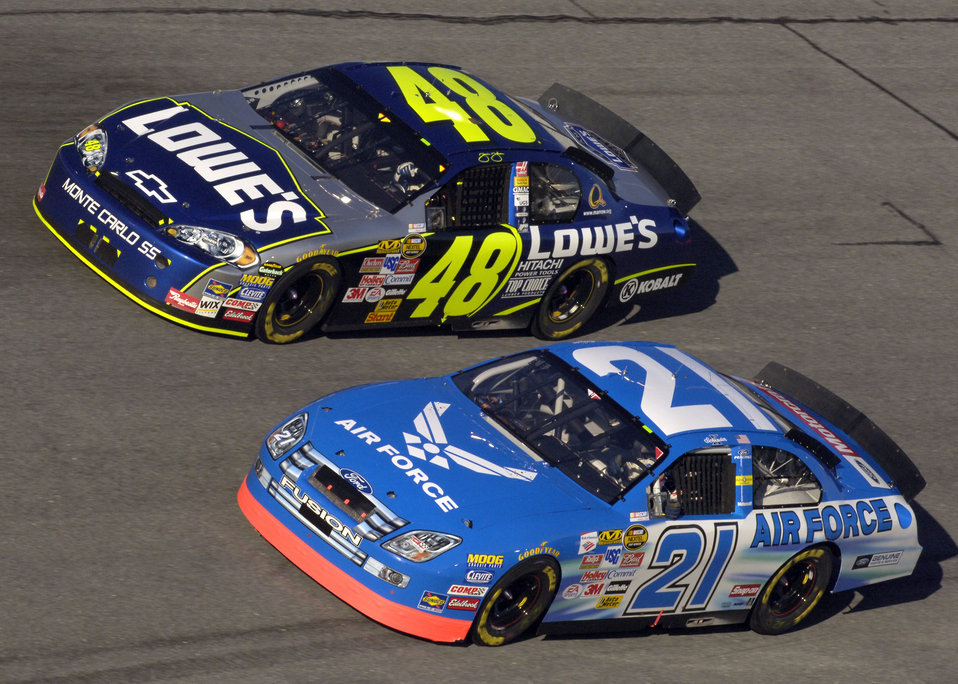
Flying around the track

DAYTONA, Fla. (AFPN) -- Ken Schrader, driving the Air Force No. 21 Ford Fusion for Wood Brothers/JTG Racing, battles Jimmy Johnson at the Budwesier Shootout at Daytona International Speedway Feb. 12. Schrader finished 14th.